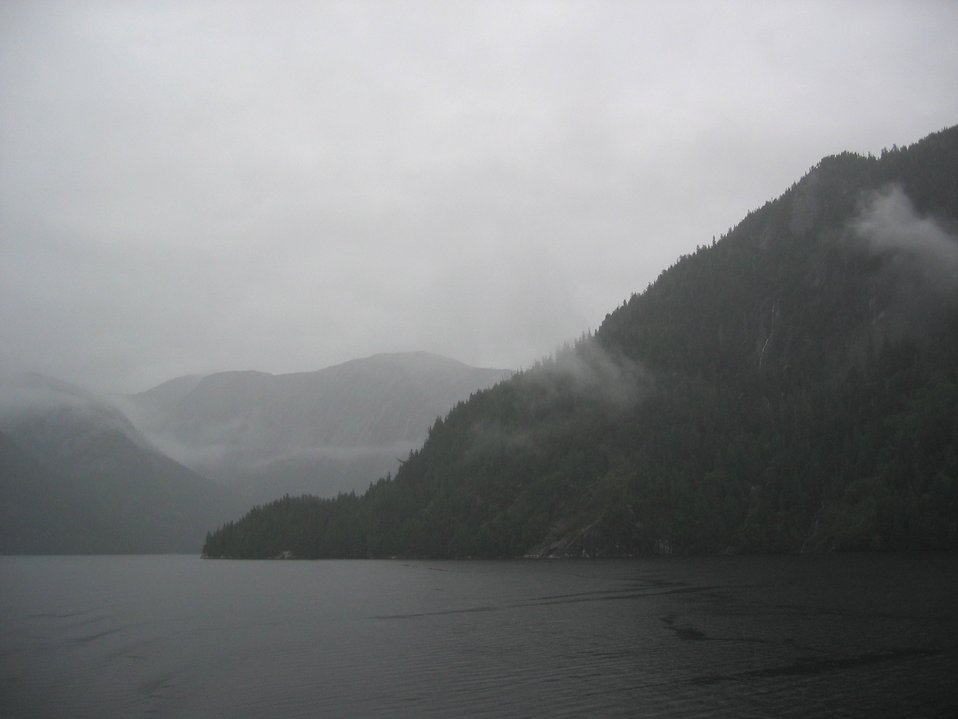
Rudyerd Bay area on a foggy, rainy, misty day.